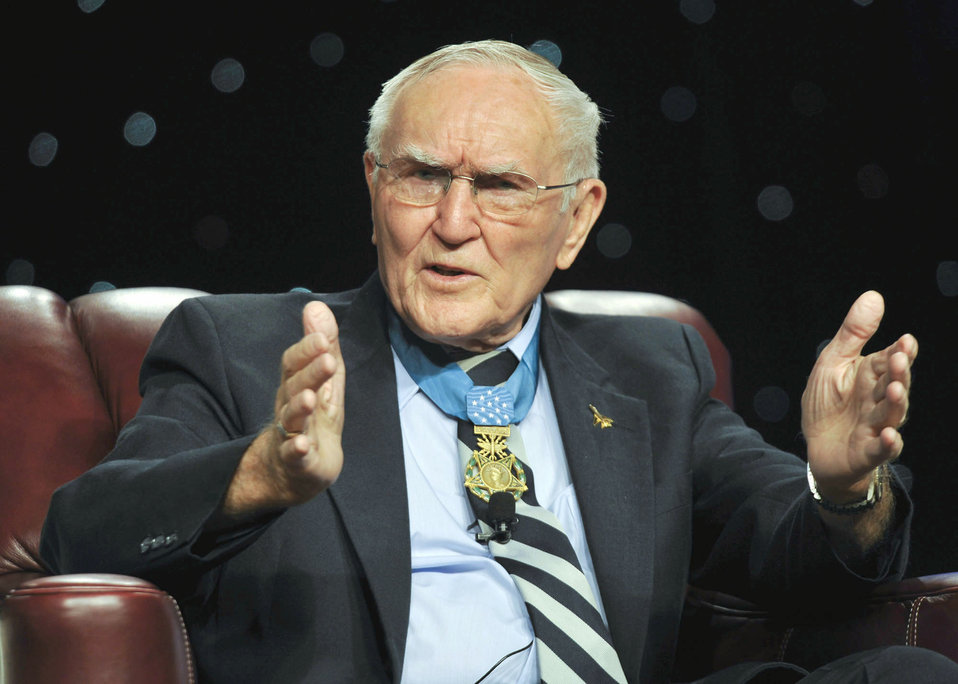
Medal of Honor recipients

Retired Col. George Day, a Medal of Honor recipient, participates in a question and answer session Sept. 15, 2010, at the Air Force Association annual Air and Space Conference and Technology Exposition at National Harbor, in Oxon Hill, Md. Colonel Day spent nearly six years as a prisoner of war in Vietnam. After his release and retirement from the Air Force, Colonel Day, also a practicing attorney, successfully led the legal battle to protect medical benefits for all retired servicemembers.